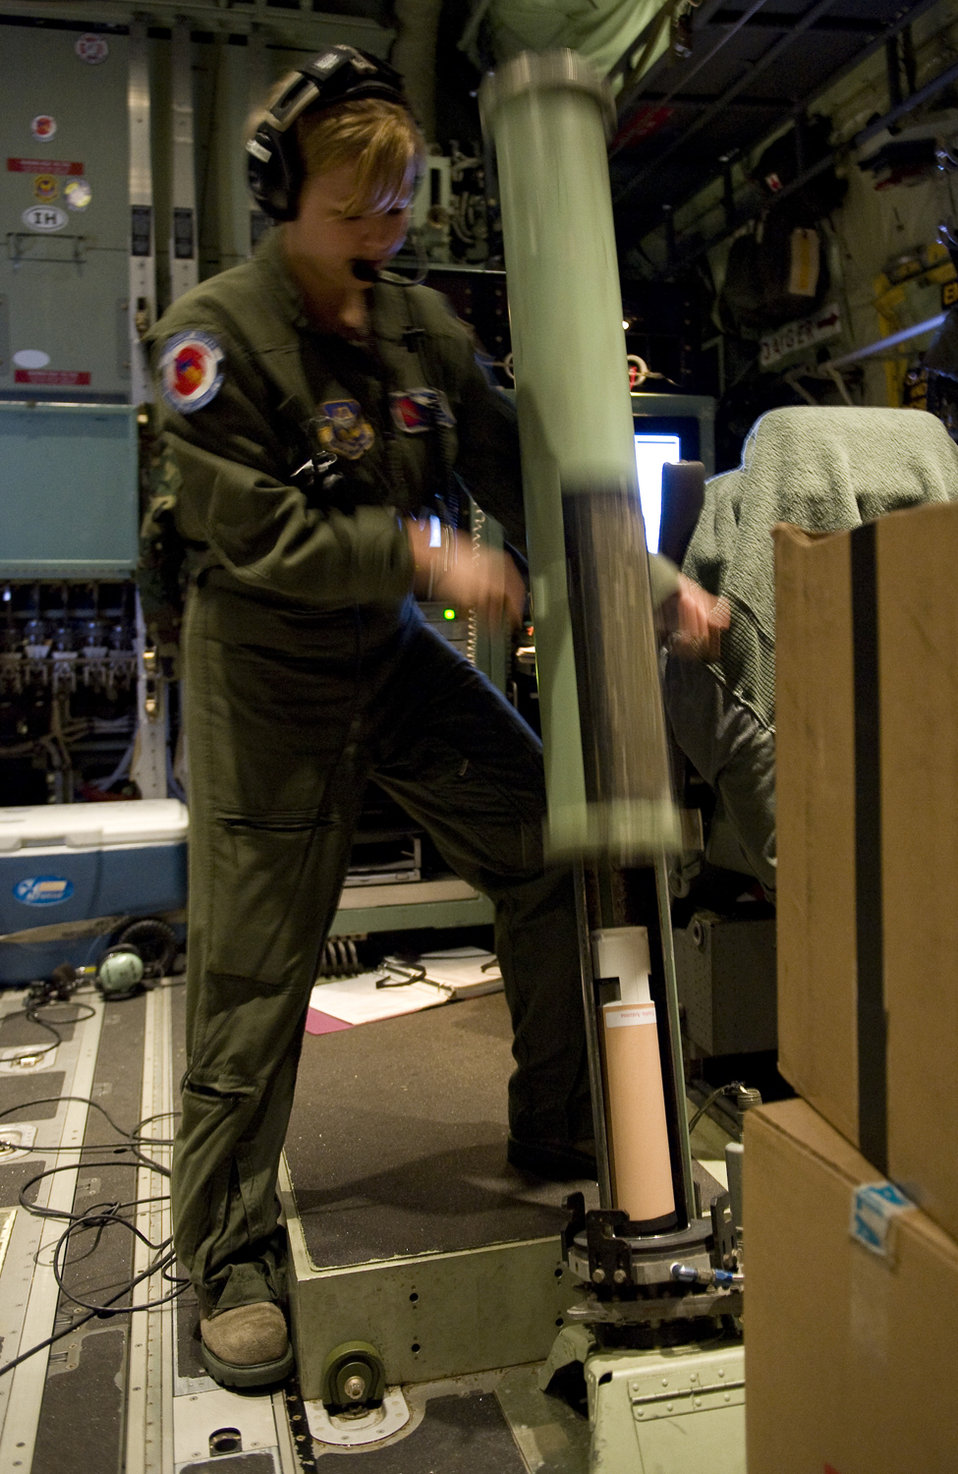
Hurricane Hunter

Aboard a WC-130J Hercules aircraft, Senior Airman Jenna Daniel loads a dropsonde for release into Hurricane Alex June 29, 2010. Weather information transmitted by the sonde is collected and evaluated to gain information about how the storm is changing. Airman Daniel is a weather reconnaissance loadmaster with the 53rd Weather Reconnaissance Squadron at Keesler Air Force Base, Miss.